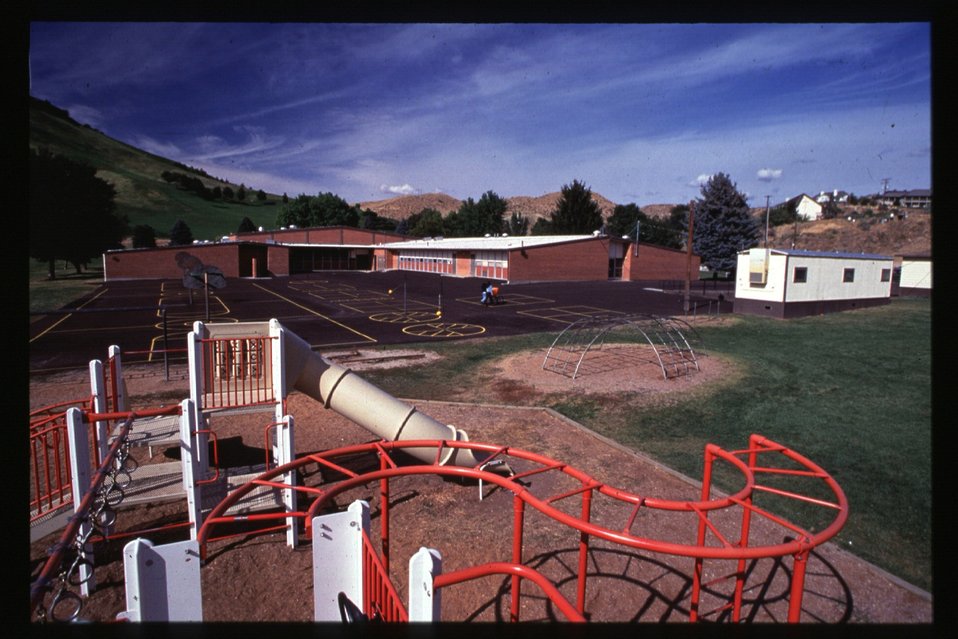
8th Street Fire Urban interface Four Rivers Field Office LSRD Lower Snake River District